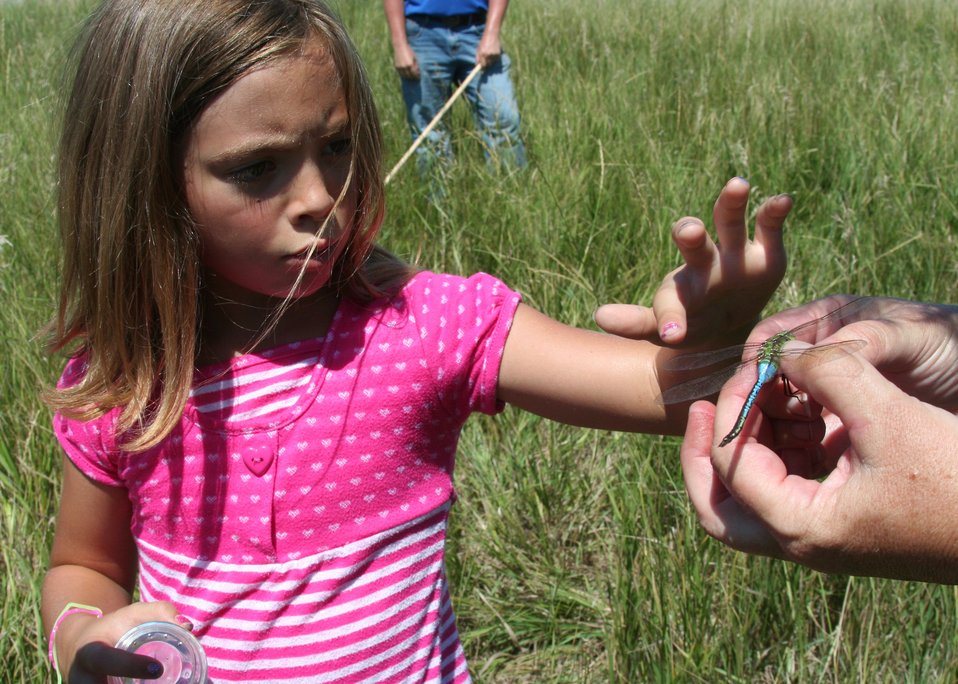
Huron Wetland Managment District

A young girl examines a dragonfly as part of her bug safari activities during Huron WMD's Praire Fest.